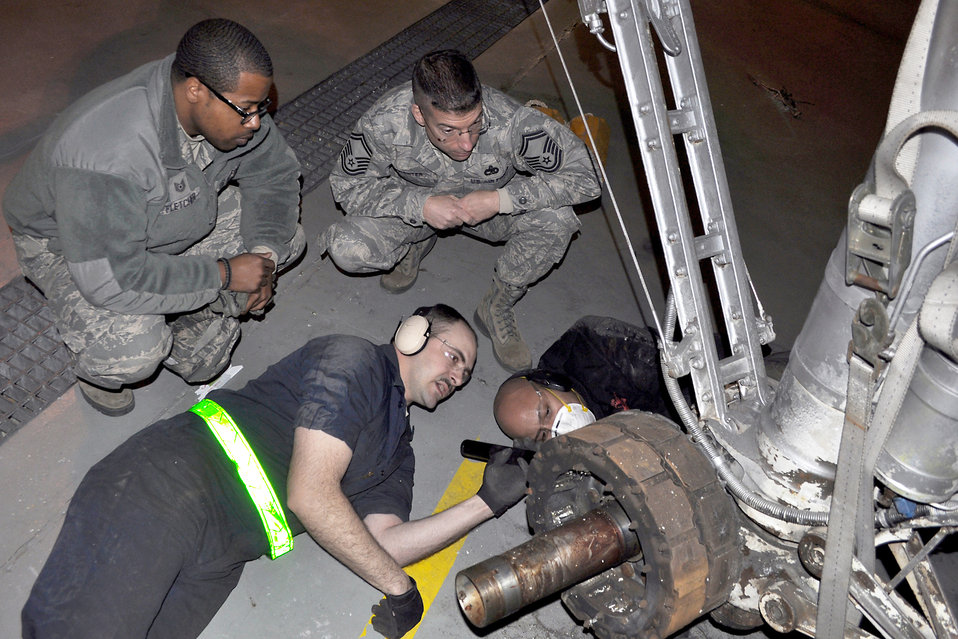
Aircraft Restoration

Tech. Sgt. Justin Fletcher (top left) and Senior Master Sgt. Christopher Hofrichter observe as Tech. Sgts. Jarod Jones and Joseph Martinek remove a landing gear mount March 4, 2011, from a C-118 Liftmaster that is being restored by active-duty and Reserve Airmen and civilians at Joint Base McGuire-Dix-Lakehurst, N.J. Sergeants Fletcher and Hofrichter are with the 514th Maintenance Group and Sergeants Martinek and Jones are with the 305th Maintenance Squadron. Liftmasters were the first cargo airplanes stationed at JB McGuire and helped the base to define its role as an air mobility gateway. When the restoration is finished, the aircraft will be displayed near the base’s passenger terminal.